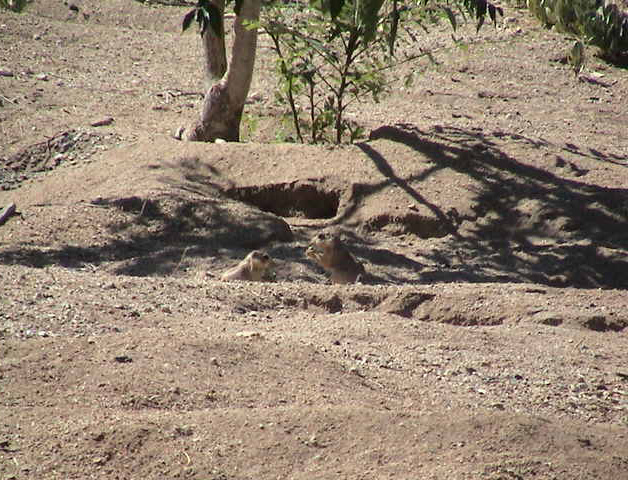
These prairie dogs, members of the genus Cynomys were photographed in New Mexico, 2003.